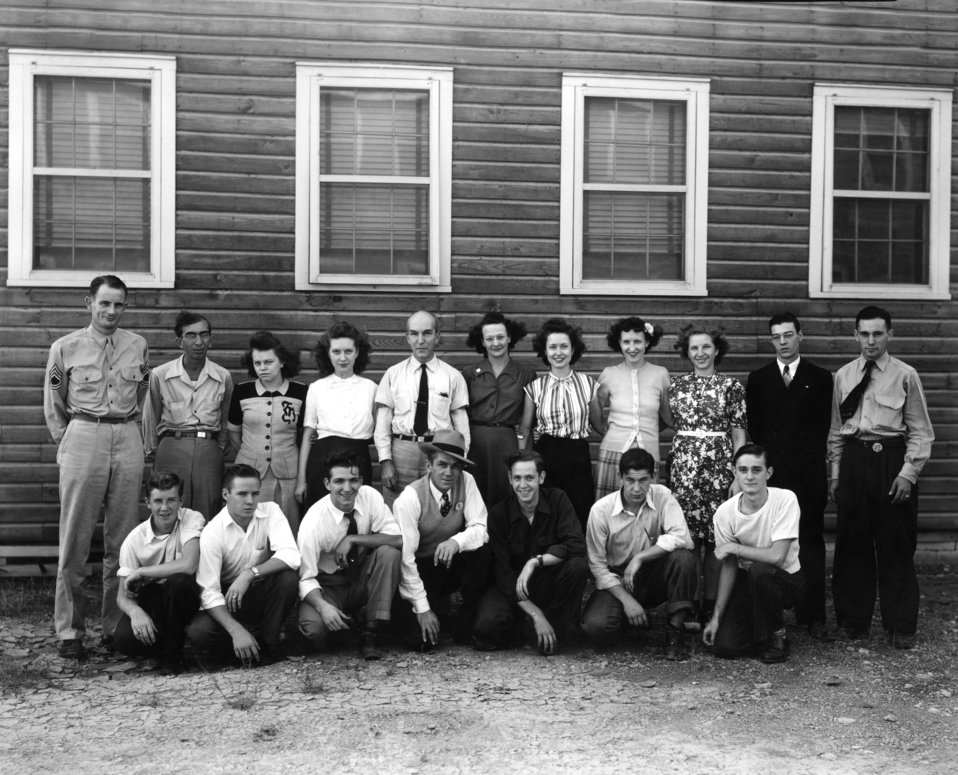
Printing Plant Group Oak Ridge

S-345 DOE photo by Ed Westcott 1944 Oak Ridge Tennessee